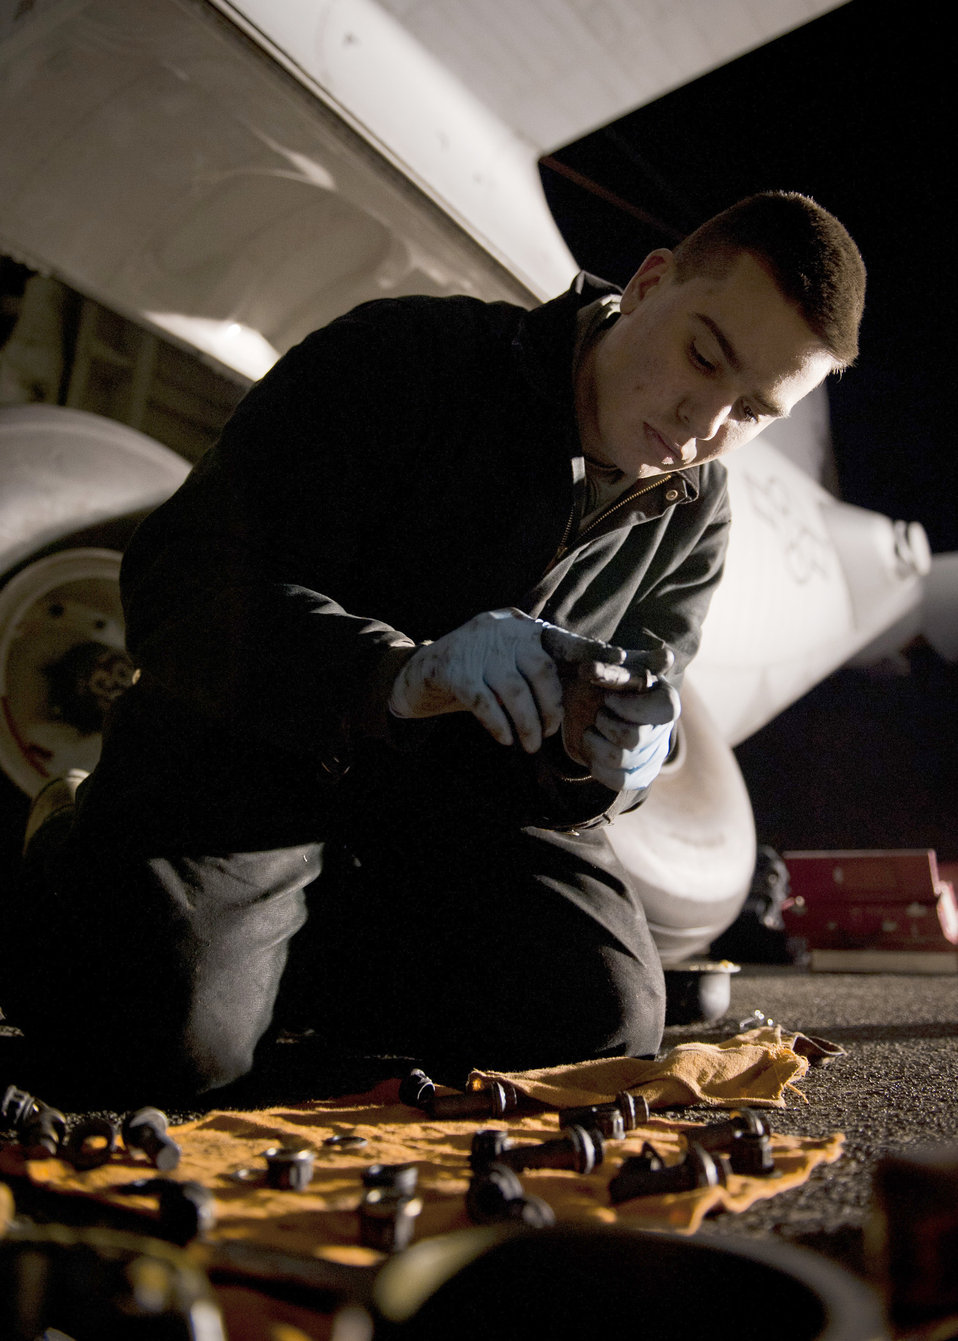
C-130 maintenance

Airman 1st Class Stephen Tessier applies grease to bolts for a C-130 Hercules March 31, 2011, at Yokota, Japan. Tessier is a crew chief assigned to the 374th Maintenance Squadron.